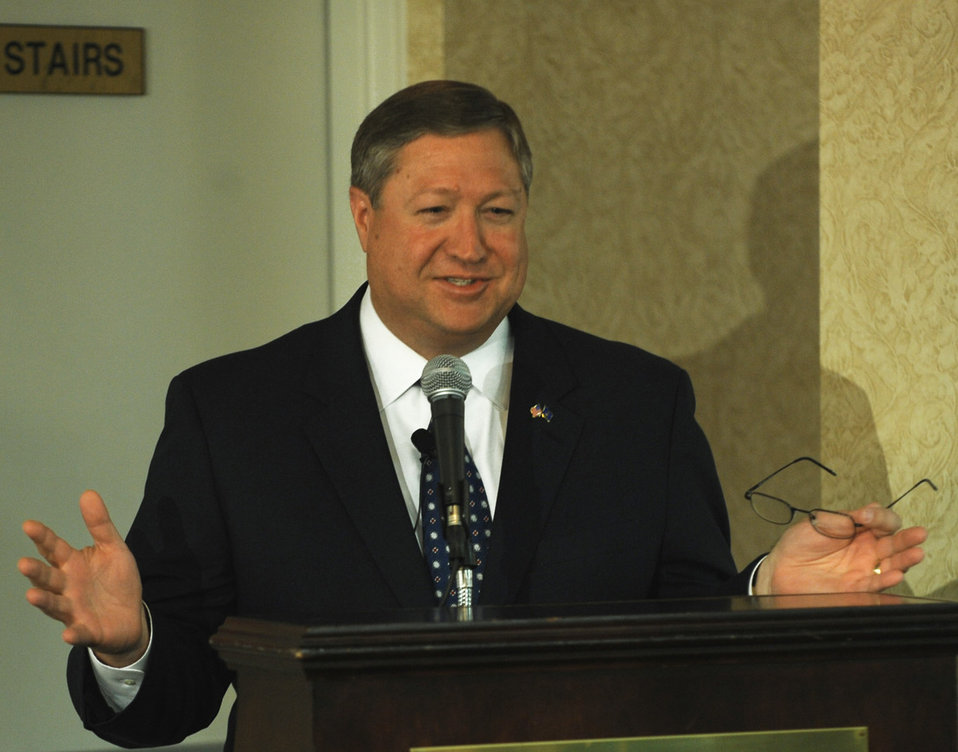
Leadership for the Future

Secretary of the Air Force Michael B. Donley addresses local community members April 23 during a senior leader panel discussion titled